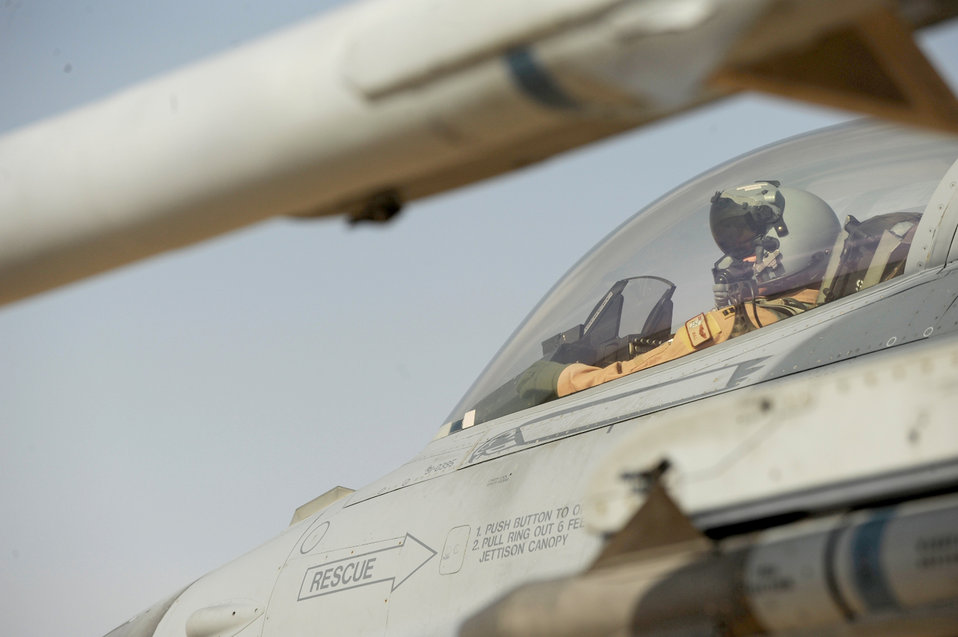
U.S., Jordan commence exercise

Capt. Bailyn Beck prepares an F-16 Fighting Falcon for takeoff Oct. 18, 2010, as part Falcon Air Meet 2010 at Azraq Air Base, Jordan. Captain Beck is assigned to the 77th Fighter Squadron from Shaw Air Force Base, S.C.